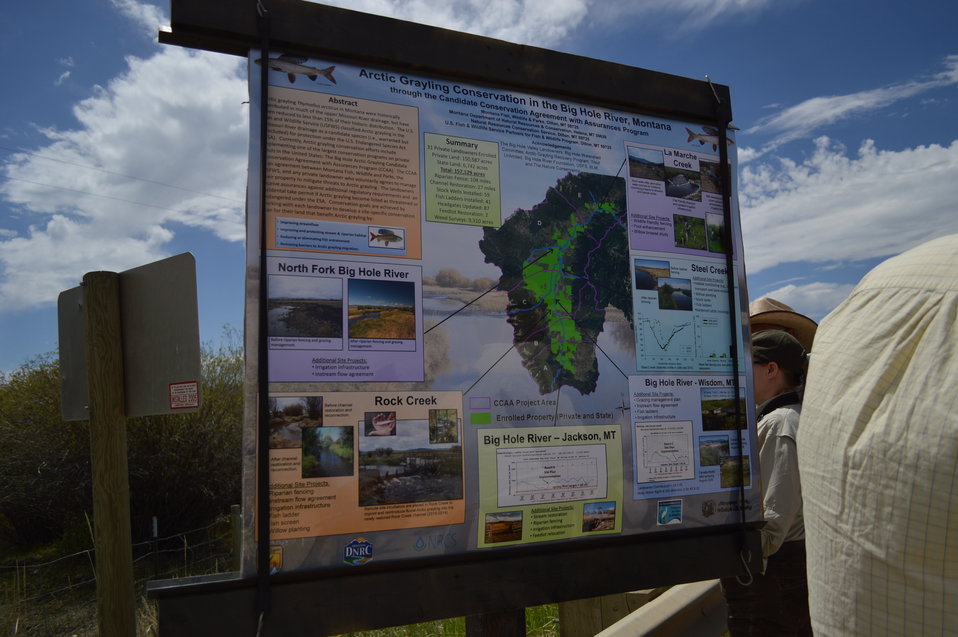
Regional Leadership Visit to Montana 2014